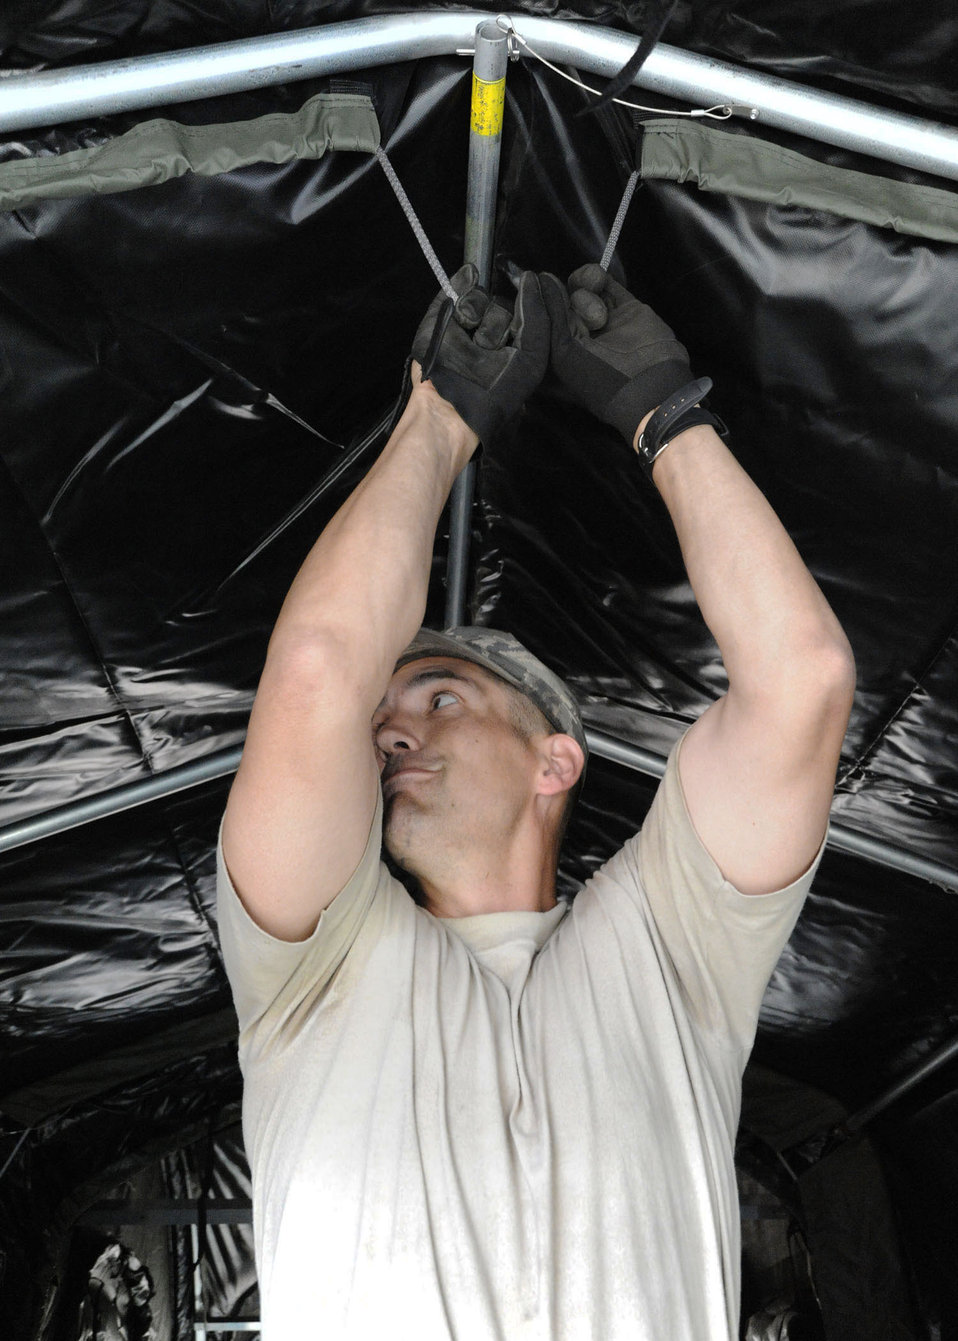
Airmen build EMEDs tents

Master Sgt. Joel Shepherd pulls a cord to tighten the exterior fabric covering a shelter that will be part of an expeditionary medical support hospital March 23, 2010, in Angol, Chile. Airmen from an Air Force Expeditionary Medical Support team along with members of the Chilean army built 13 shelters that will make up the hospital. The hospital will serve as a temporary facility for up to three years until a new hospital can be built in Angol. Sergeant Shepherd is the first sergeant of the EMEDs team, and he is deployed from Keesler Air Force Base, Miss.